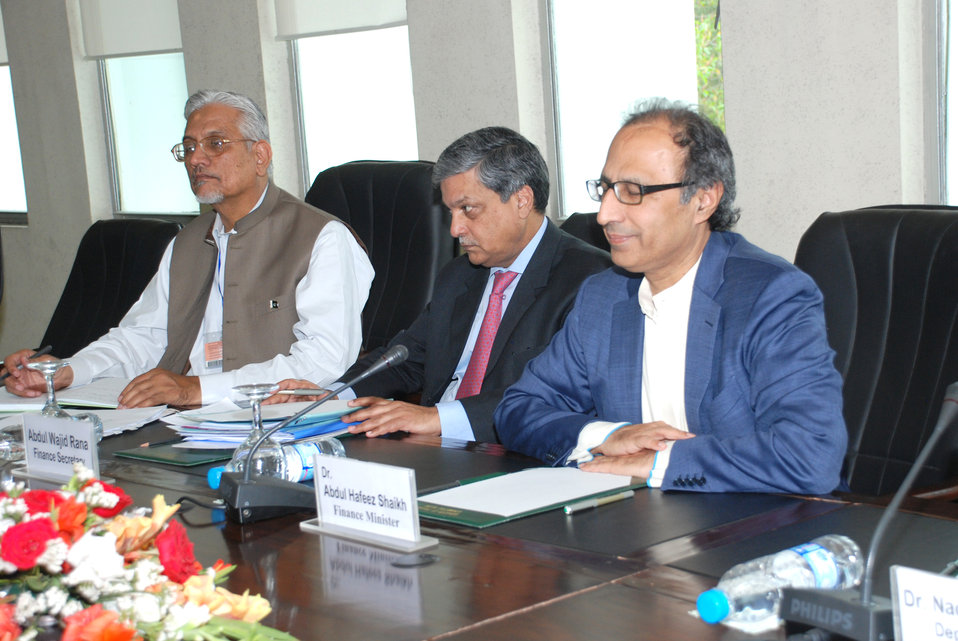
USAID and Pakistan Working Together to Promote Growth, Prosperity at Islamabad on April 13, 2012